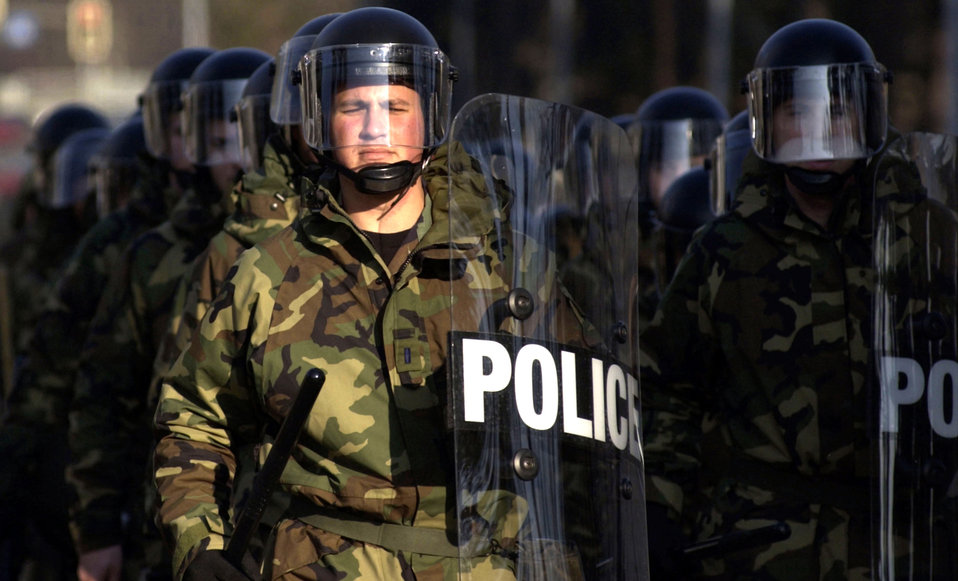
Riot ready

VOGELWEH AIR STATION, Germany -- First Lt. Douglas Vetrano leads riot-control police during an exercise here Feb. 14. Vetrano is assigned to the 569th U.S. Forces Police Squadron.